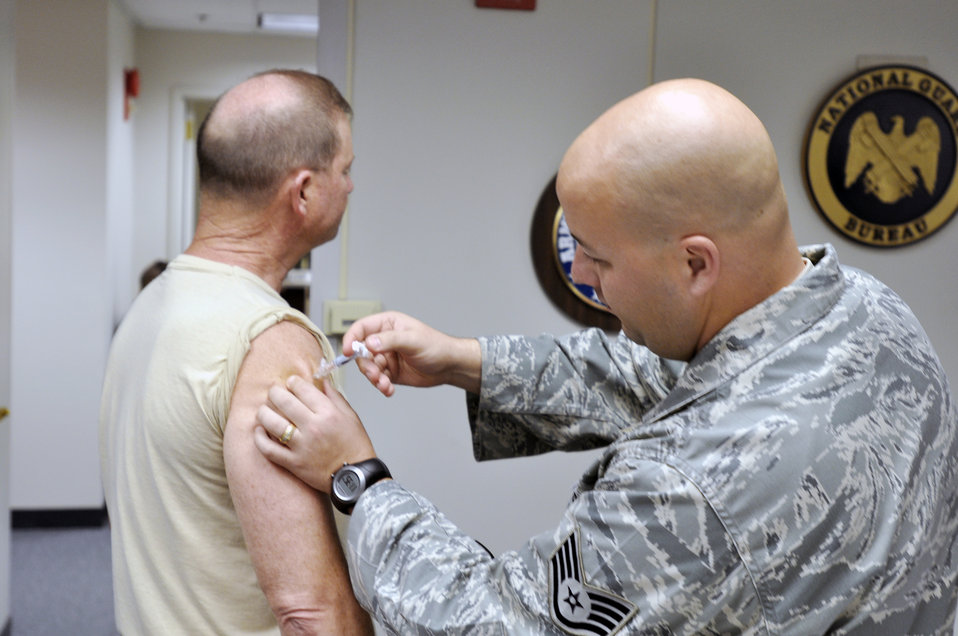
579th Medical Group

Army Sgt. Maj. Michael Mumford of the plans division of the National Guard Bureau in Arlington, Va., receives a seasonal flu shot from Staff Sgt. Shane Harper of the 579th Medical Group based during a vaccination campaign at the National Guard Bureau Oct. 23, 2009, at Bolling Air Force Base, D.C. The shot is mandatory for active-duty servicemembers.